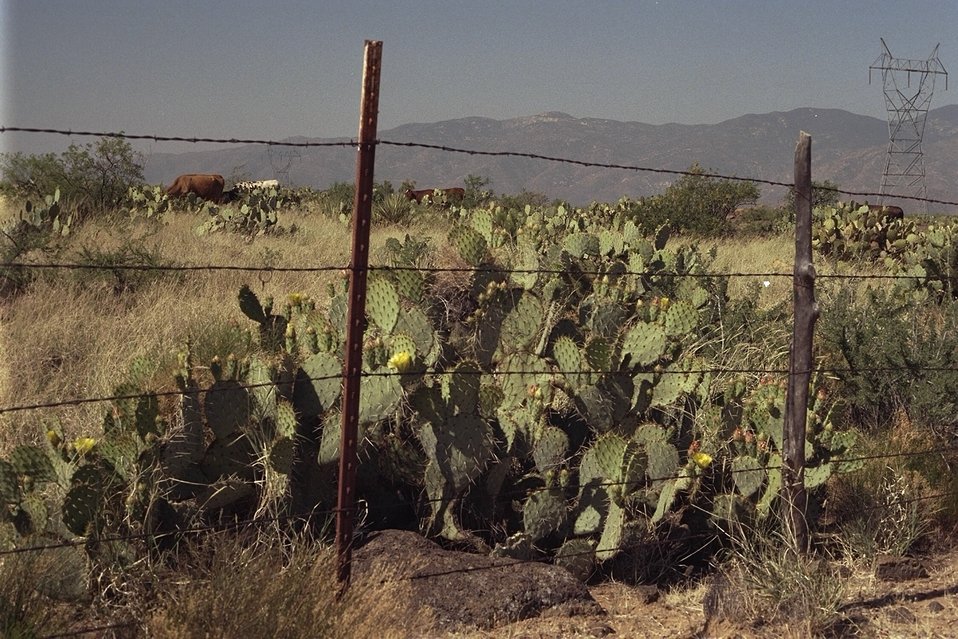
A barbed-wire fence, Prickly pear cacti, and a cow in the background.